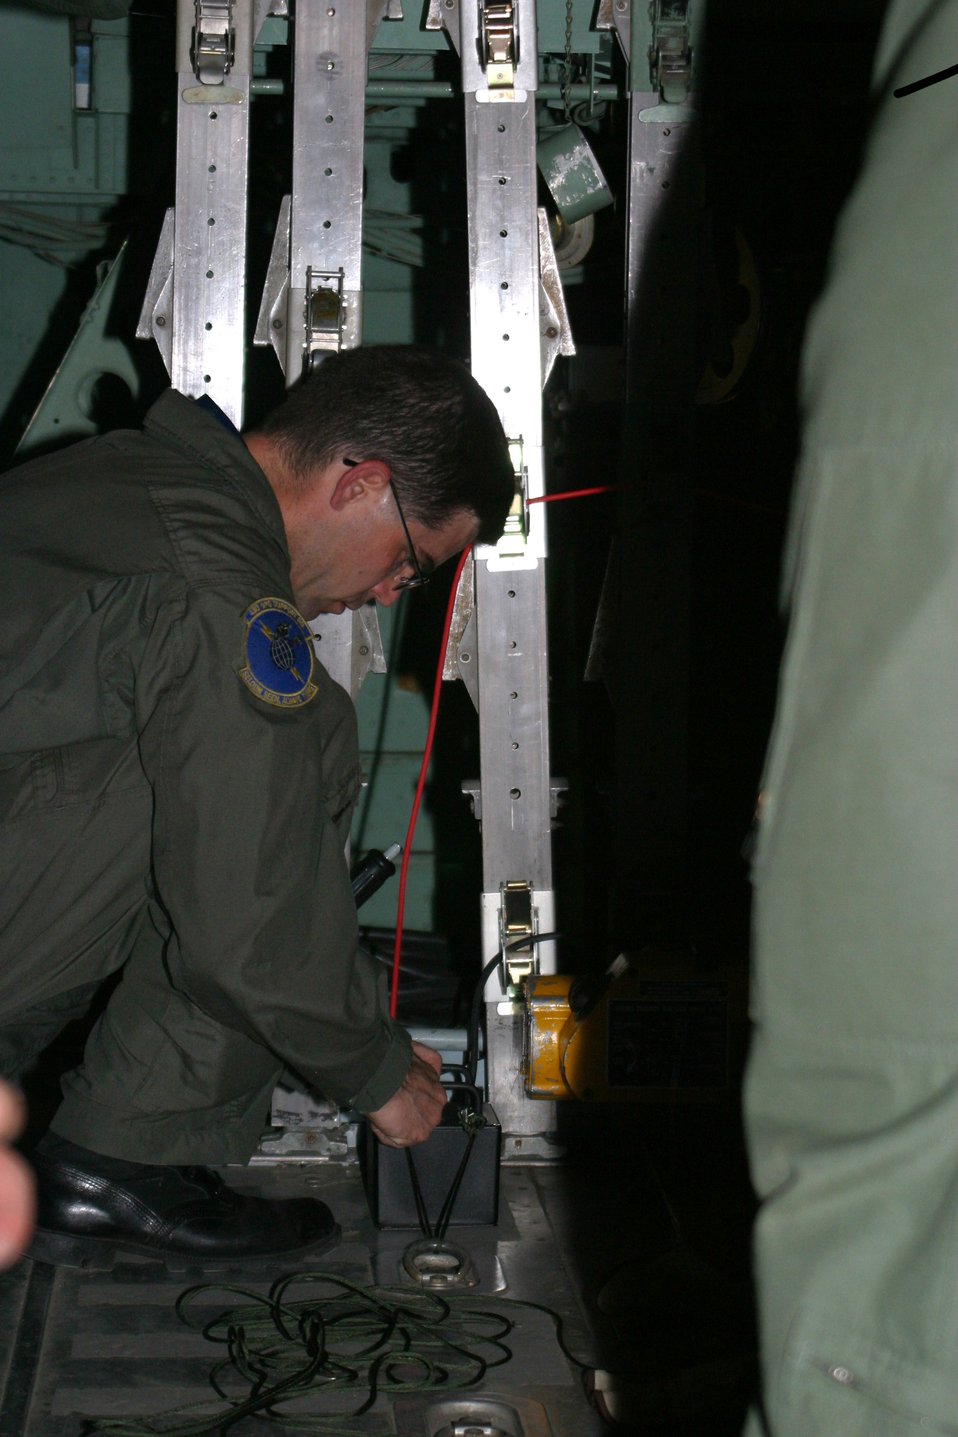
Loadmasters use new parachute jettison device

Tech. Sgt. Robert Russell sets up an emergency parachute jettison device in a cargo aircraft at Pope Air Force Base, N.C., on Tuesday, April 25, 2006. The EPJS was used for the first time April 25. The product has been in development and testing since 1997. Sergeant Russell is assigned to the 43rd Operational Support Squadron.